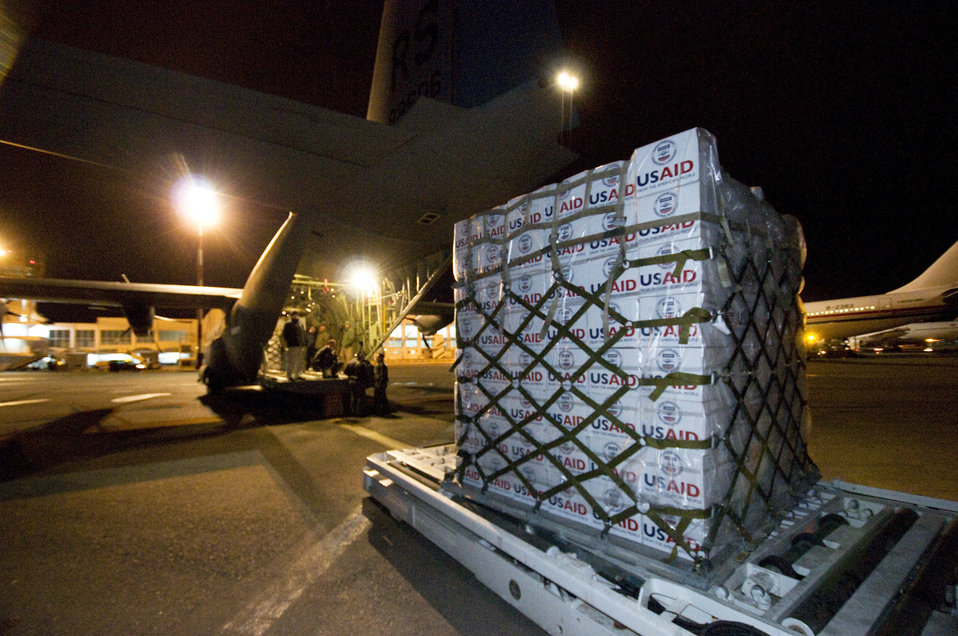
US Aid to Tunisia

March 4th 2011, U.S. Airmen from the 435th Air Mobility Squadron out of Ramstein Air Base unload blankets, tarps and water containers provided by US Aid at Djerba Zarzis Airport in Tunisia. The U.S. Government is working intensely with the International community to meet the humanitarian needs of the Lybian people and others in the country who fled across the borders. U.S. Army Photo by Staff Sgt. Brendan Stephens. Approved for Public Release